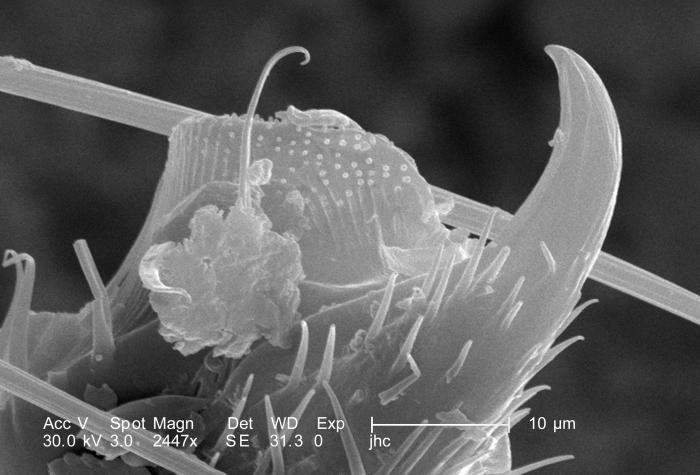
Highly magnified 612X, this scanning electron micrograph (SEM) revealed some of the morphologic features located at the distal end of an unidentified 1/4"-sized black flying insect's leg. The arthropod also displayed a small red mark on its dorsum. In this particular view you'll note a close-up view of one of two hooks, which provided the organism with a firm grasp while maneuvering through its environment. PHIL 9922, showed two hooked appendages, which were positioned in opposition to one another. See PHIL 9924 for more highly magnified view of this anatomical region.